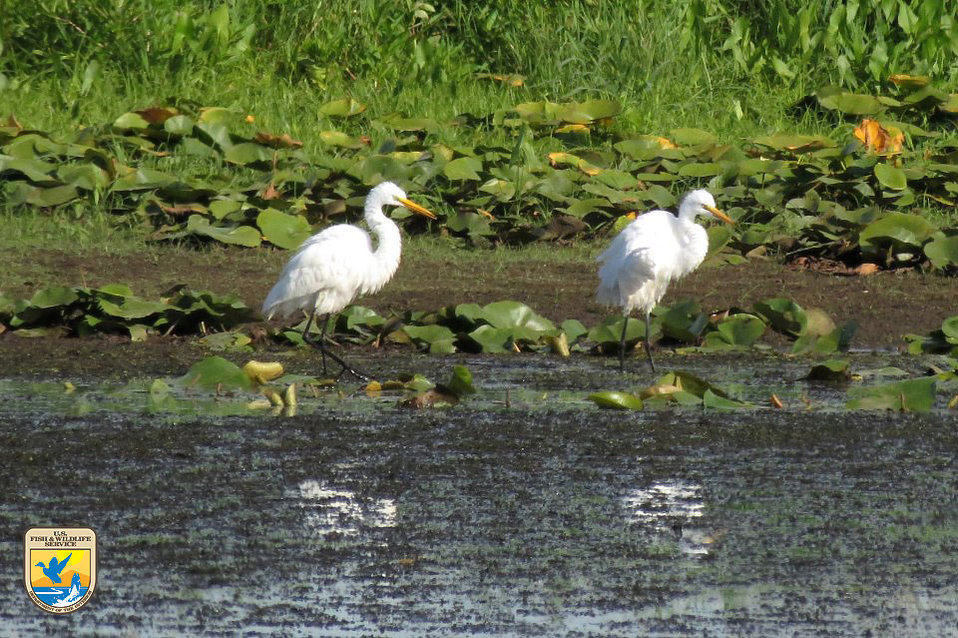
Great Egrets - Midwest Region

Great egrets at Port Louisa National Wildlife Refuge